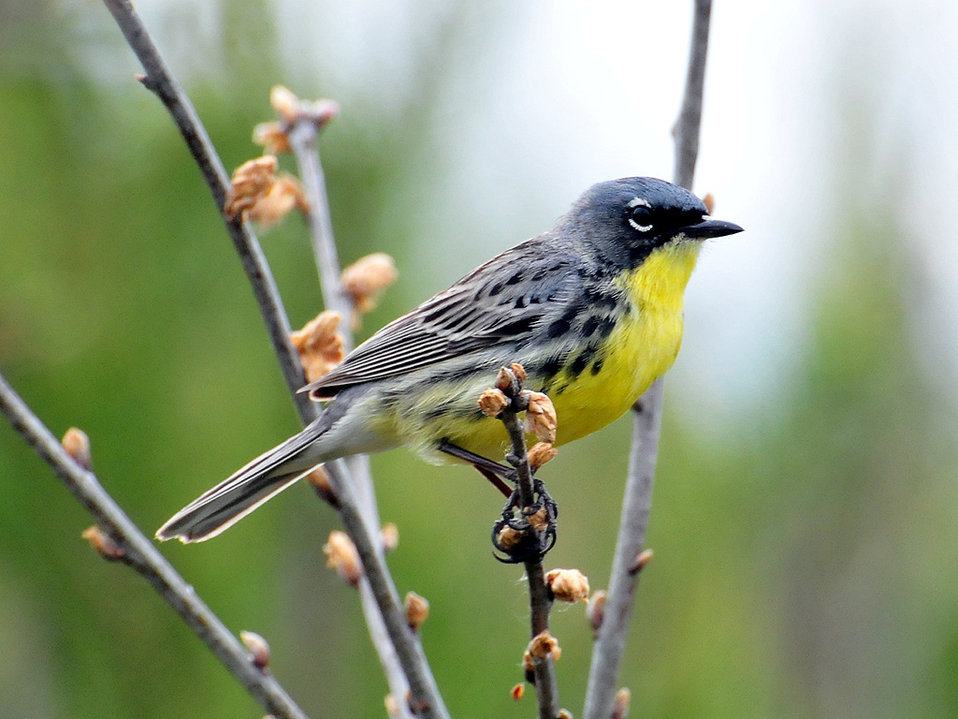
Endangered Kirtland's warbler (Dendroica kirtlandii)

Learn about the historical importance of fire in managing healthy jack pine forests in Michigan, which the endangered Kirtland’s warbler depends: www.fws.gov/endangered/news/episodes/bu-10-2011/kirtlands...